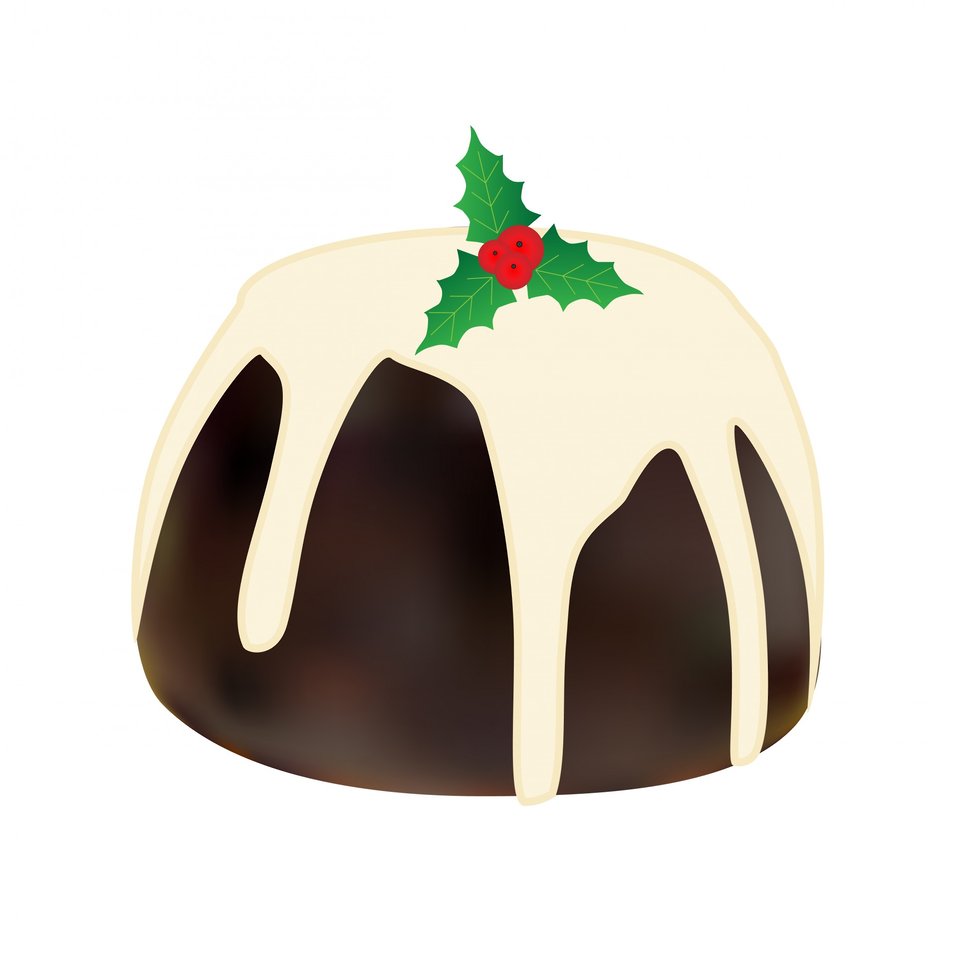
Christmas pudding white background

Christmas pudding illustration on white background.